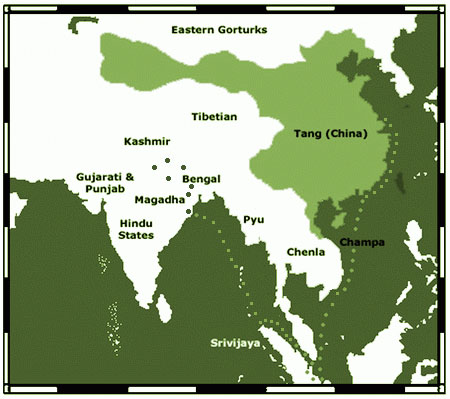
Map of I-Tsing.